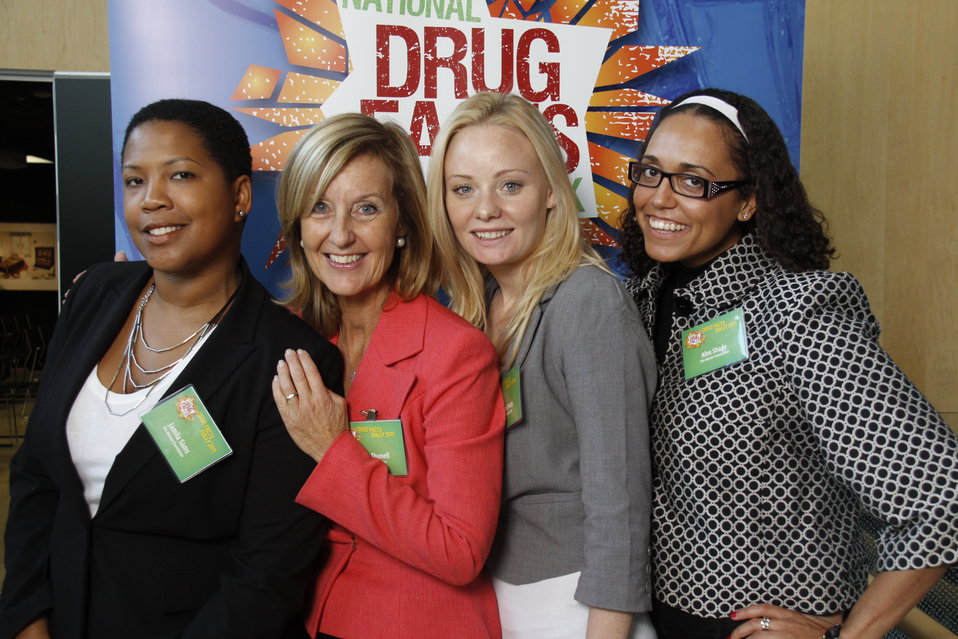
NDFW Mentor Event